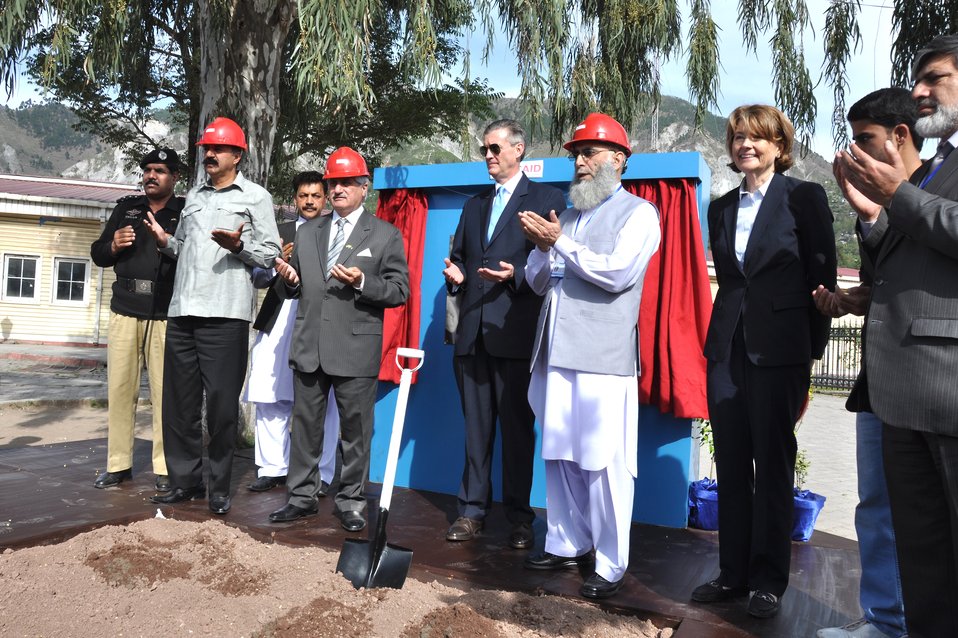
The United States Ambassador to Pakistan, Richard Olson broke ground for a U.S. funded construction of a new Faculty of Education building in Muzaffarabad, AJK. 22